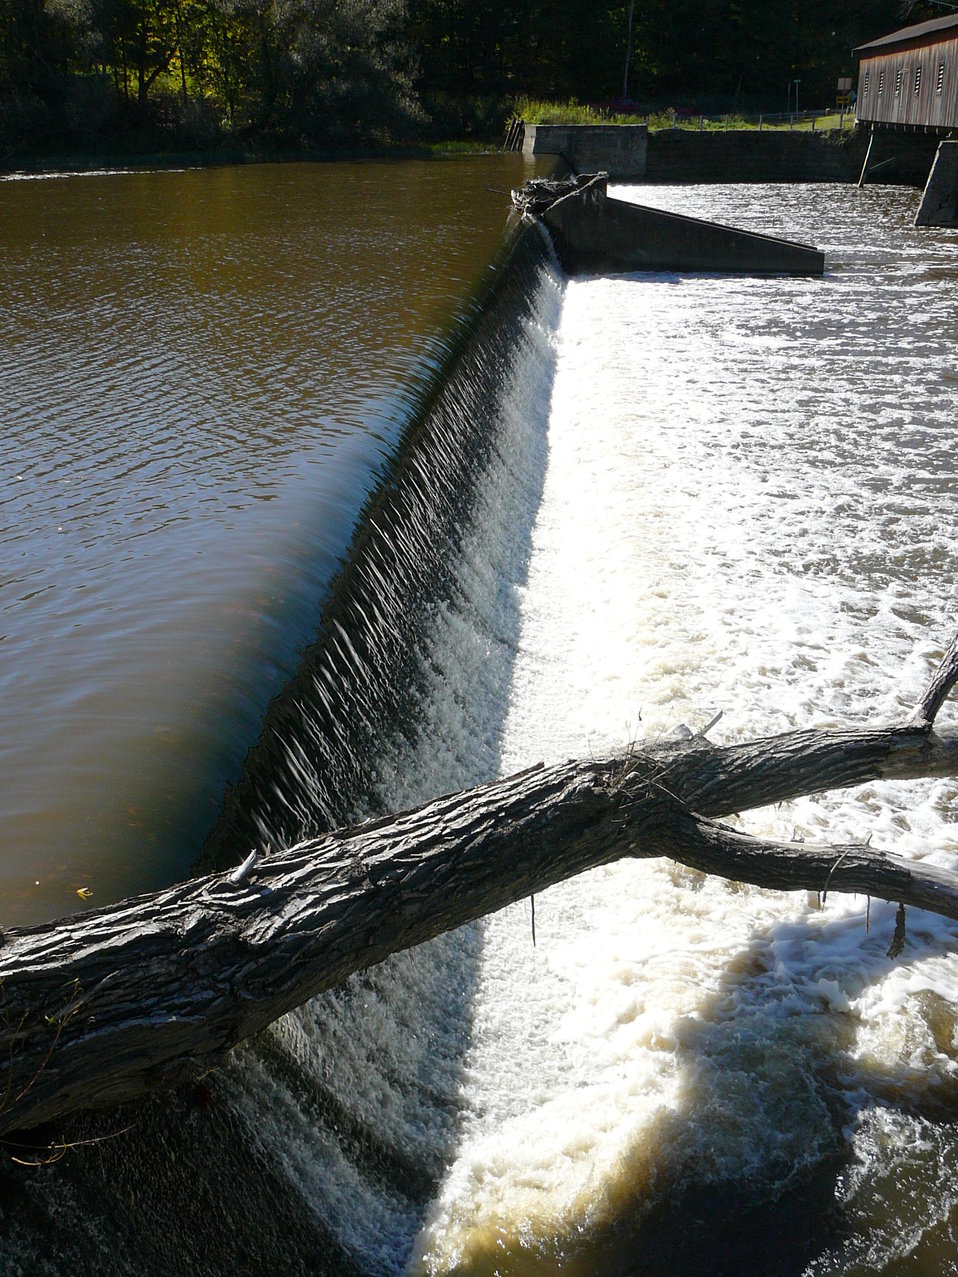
The Harpersfield Dam on the Grand River in Ohio Serves as a Barrier to Sea Lamprey Migration.